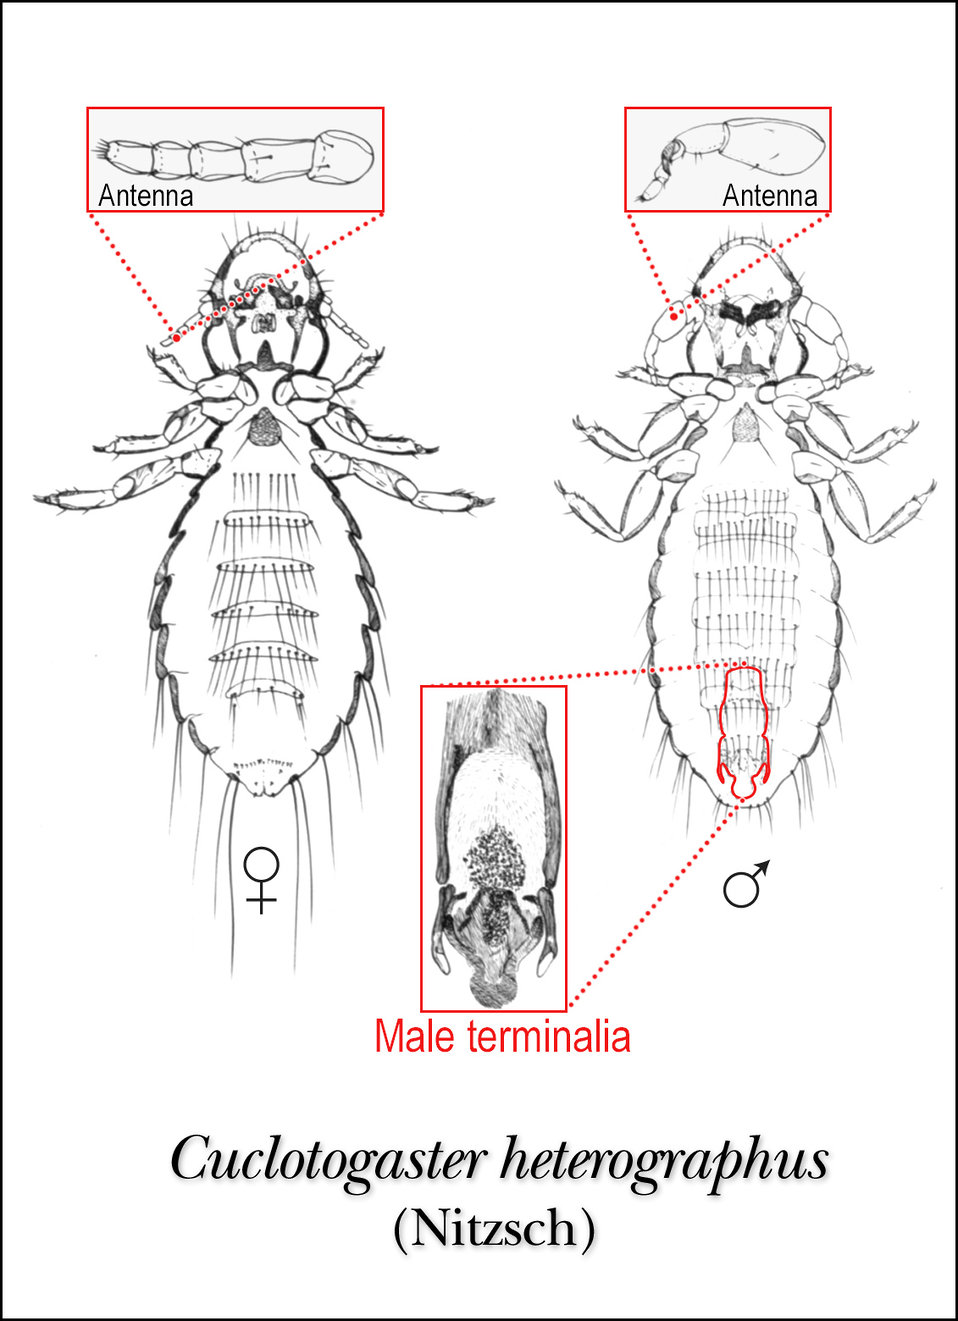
This illustration of female and male lice, Cuclotogaster heterographus shows the ventral aspect of this species (Nitzsh).